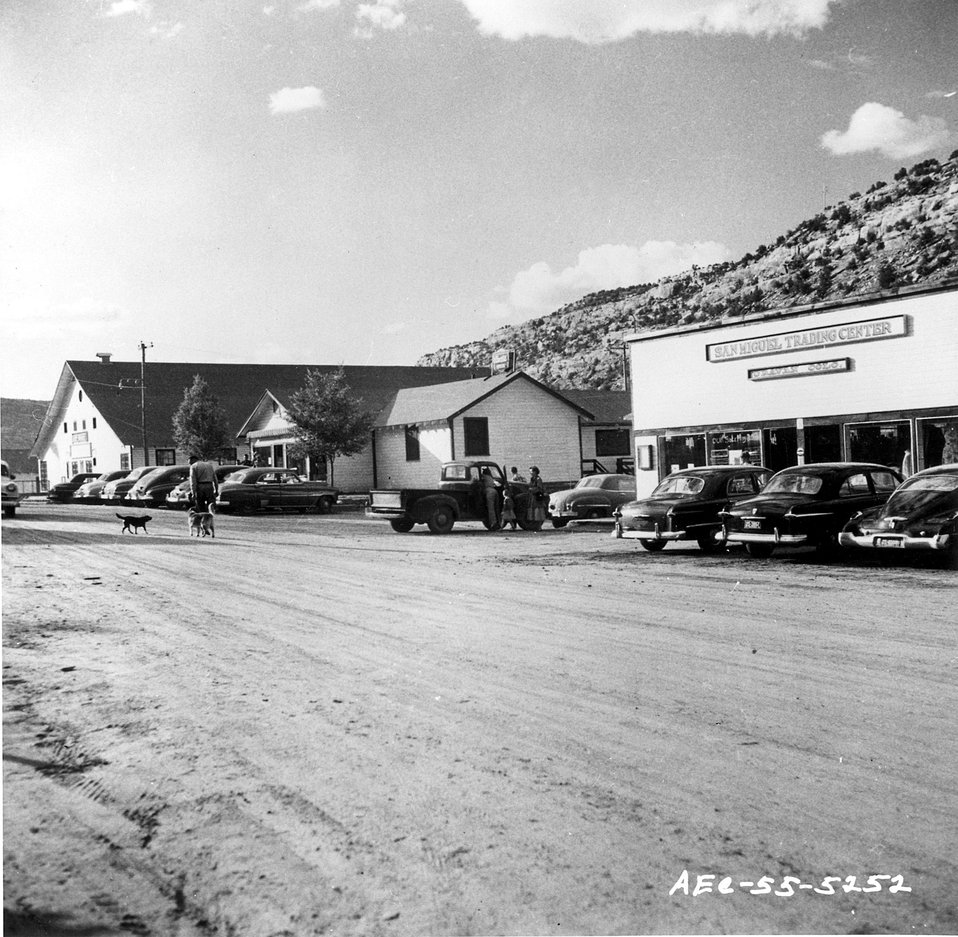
Uravan, Colorado, where the largest uranium ore-treatment plant is located, is a prosperous and 'up-to-the-minute' American community. c. 1955